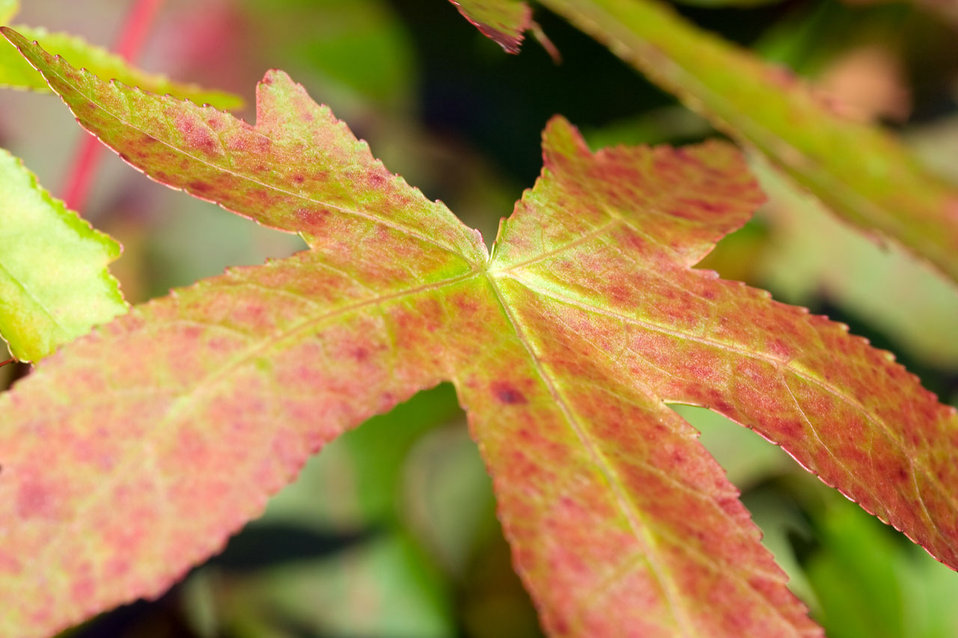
Autumn leaf

A close up of a leaf in autumn.